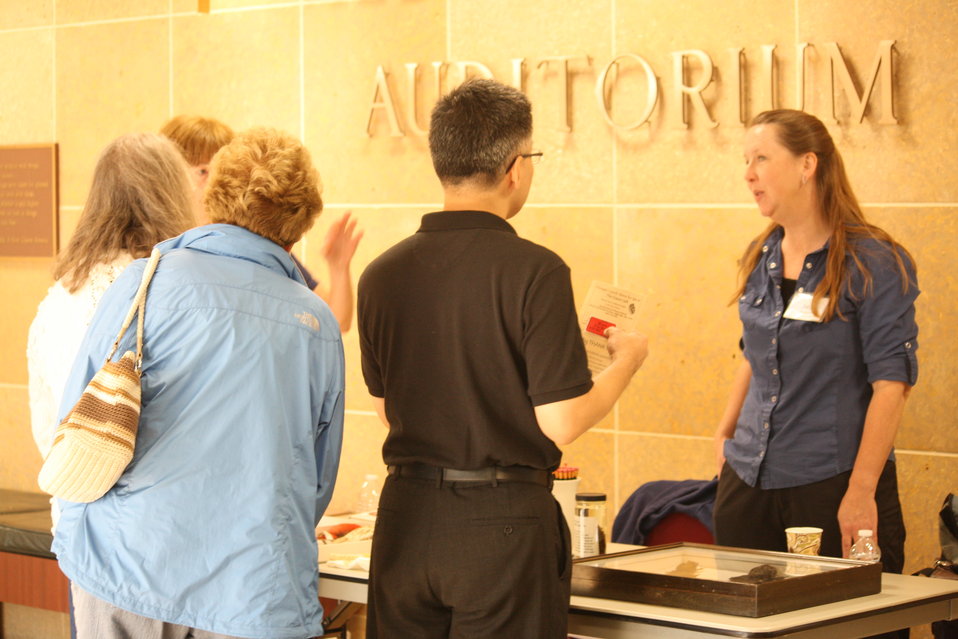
Patuxent Research Refuge 75th Anniversary

Patuxent 75th Anniversary celebration bat display.